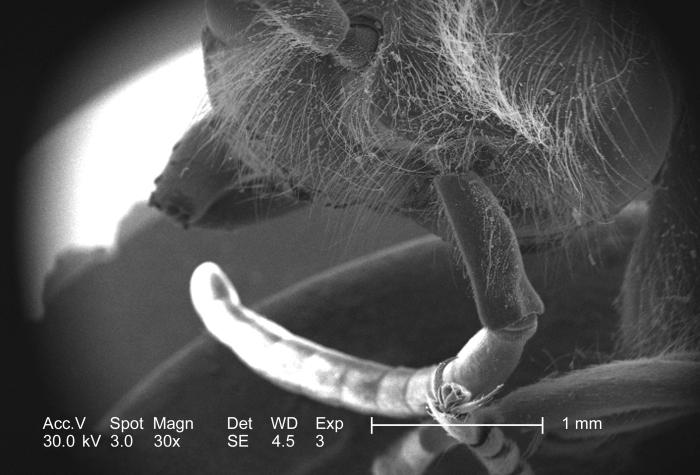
Though magnified only 30x, this 2005 scanning electron micrograph (SEM) depicted the anatomical relationship of the antenna, and the head of this unidentified hymenopteran specimen found deceased on the ground of the Decatur, Georgia suburbs.